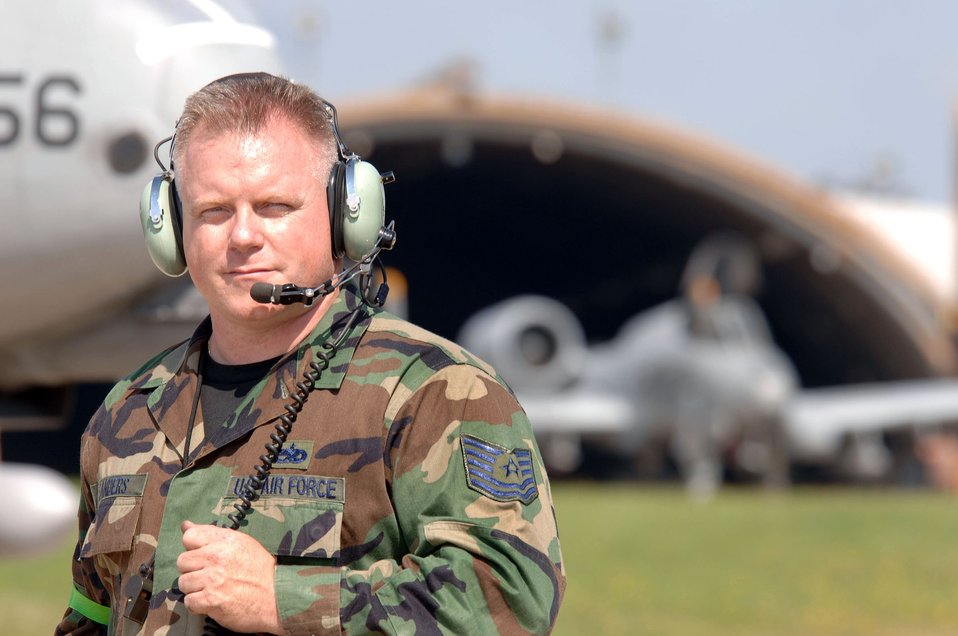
Training keeping Spangdahlem 'Warthogs' ready to deploy

SPANGDAHLEM AIR BASE, Germany -- Tech. Sgt. Ken Sanders is an 81st Aircraft Maintenance Unit A-10 Thunderbolt II crew chief at this busy fighter base. He is one of many maintainers here that keep the 81st Fighter Squadron's aging A-10 aircraft flying at an above-average mission capable rate.